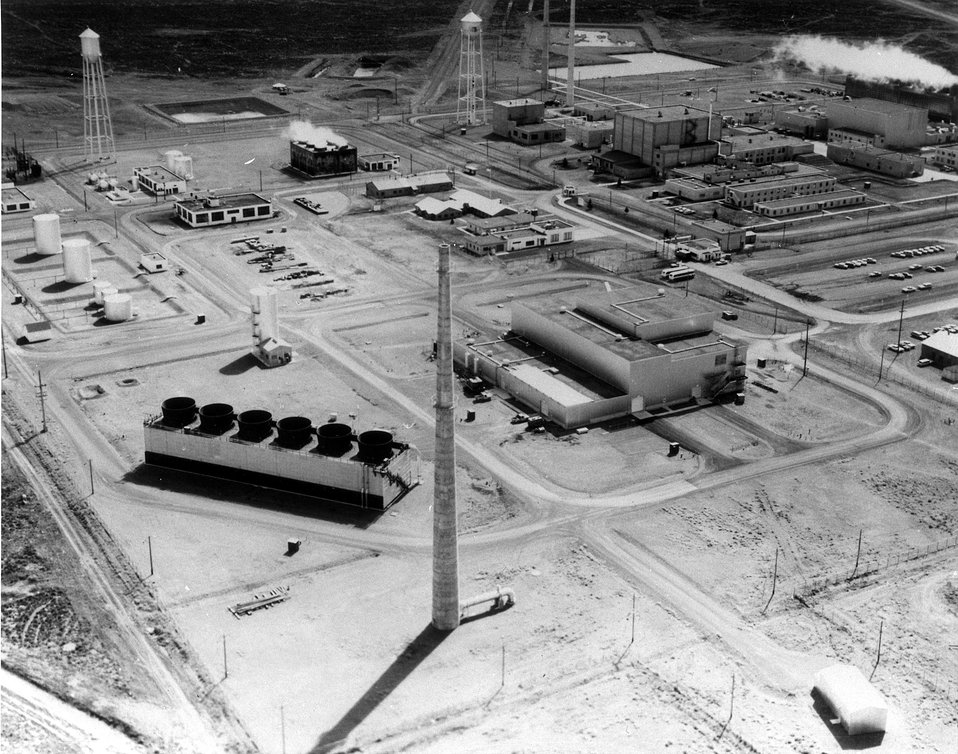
National Reactor Testing Station, Idaho. Aerial view of the Test Reactor Area at the Atomic Energy Commission's National Reactor Testing Station. Circa 1967.